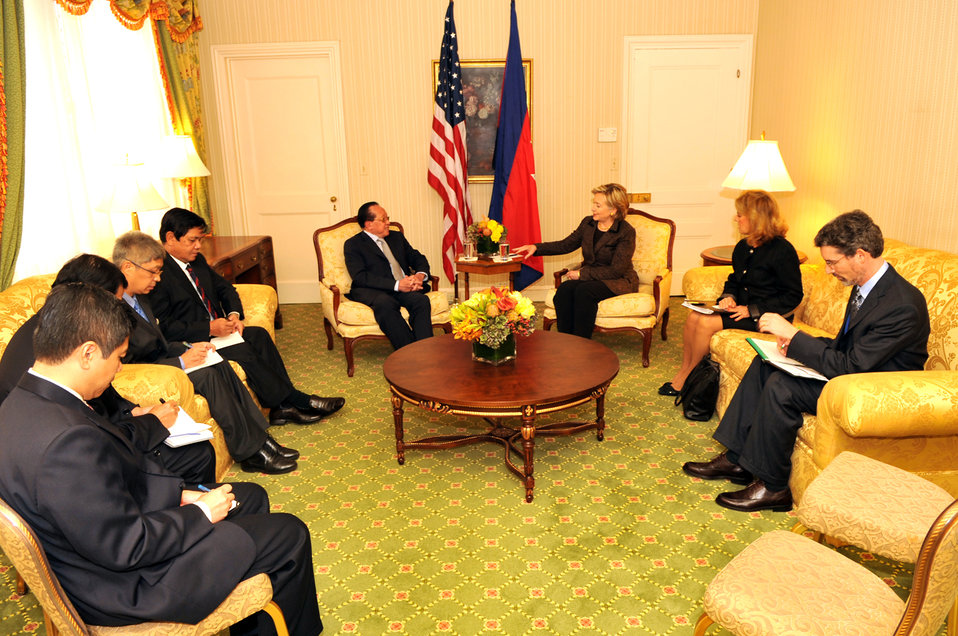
UNGA 2009: Secretary Clinton Meets With Cambodia Foreign Minister

U.S. Secretary of State Hillary Rodham Clinton meets with Cambodian Deputy Prime Minister and Foreign Minister Hor Namhong at the Waldorf Astoria hotel in New York City, New York September 28, 2009.